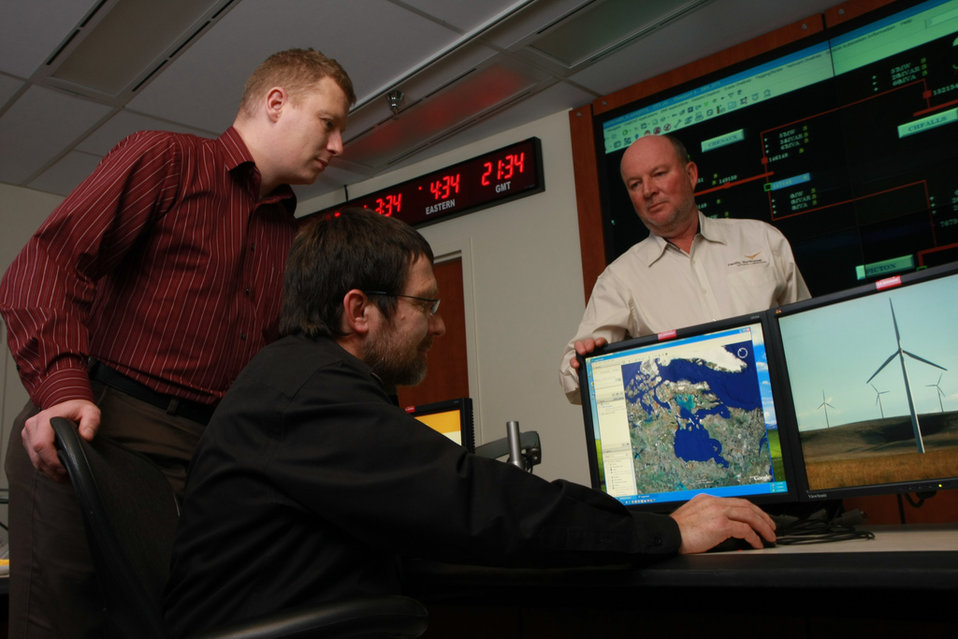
PNNL researchers Michael Kintner-Meyer, Rob Pratt, and Kevin Schneider in the Electricity Infrastructure Operations Center (EIOC).
Pacific Northwest National Laboratory researchers are exploring how changes in the way the nation's electrical grid is operated can improve its reliability, lower costs and lessen environmental impacts. The focus is on developing real-time tools and supporting their integration into operating systems. The EIOC brings together industry-leading software, real-time grid data and advanced computation into a fully capable control room. The new technologies developed here will be transferable across the industry and address the national need for a more reliable and effective electricity grid.